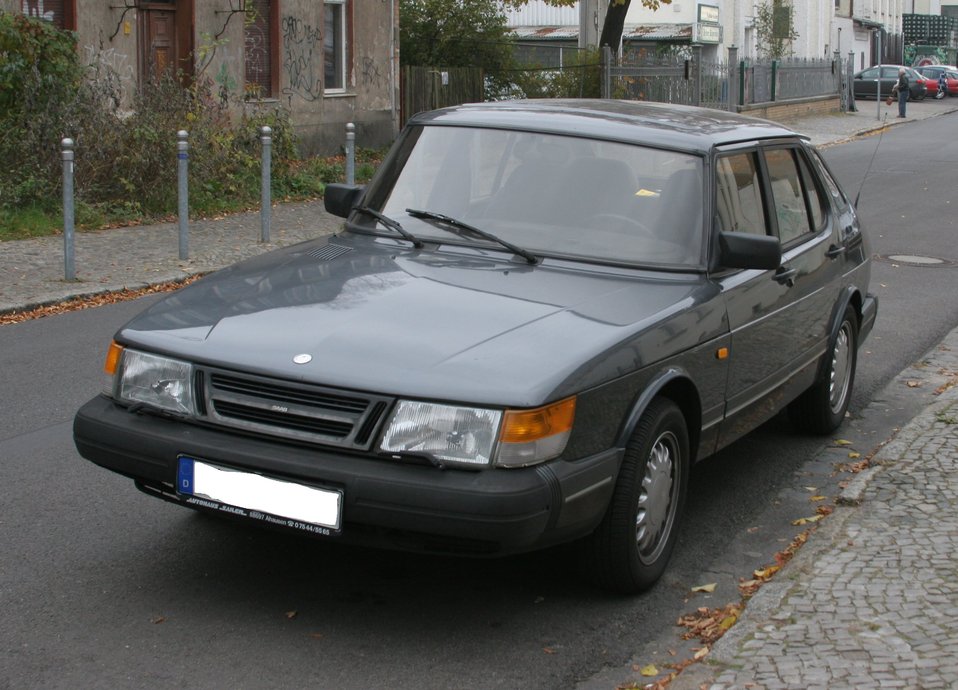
Saab 900i 16v